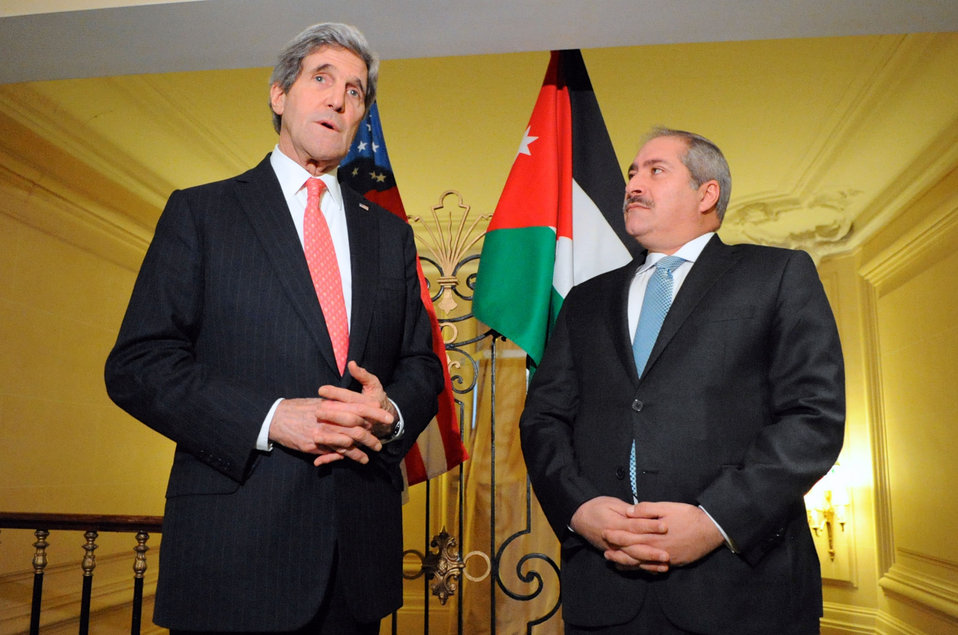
Secretary Kerry Discusses Syria With Jordanian Foreign Minister Judeh in Paris

U.S. Secretary of State John Kerry, joined by Jordanian Foreign Minister Nasser Judeh, addresses reporters about their upcoming discussion of Syria during a bilateral meeting in Paris, France, on February 19, 2014.